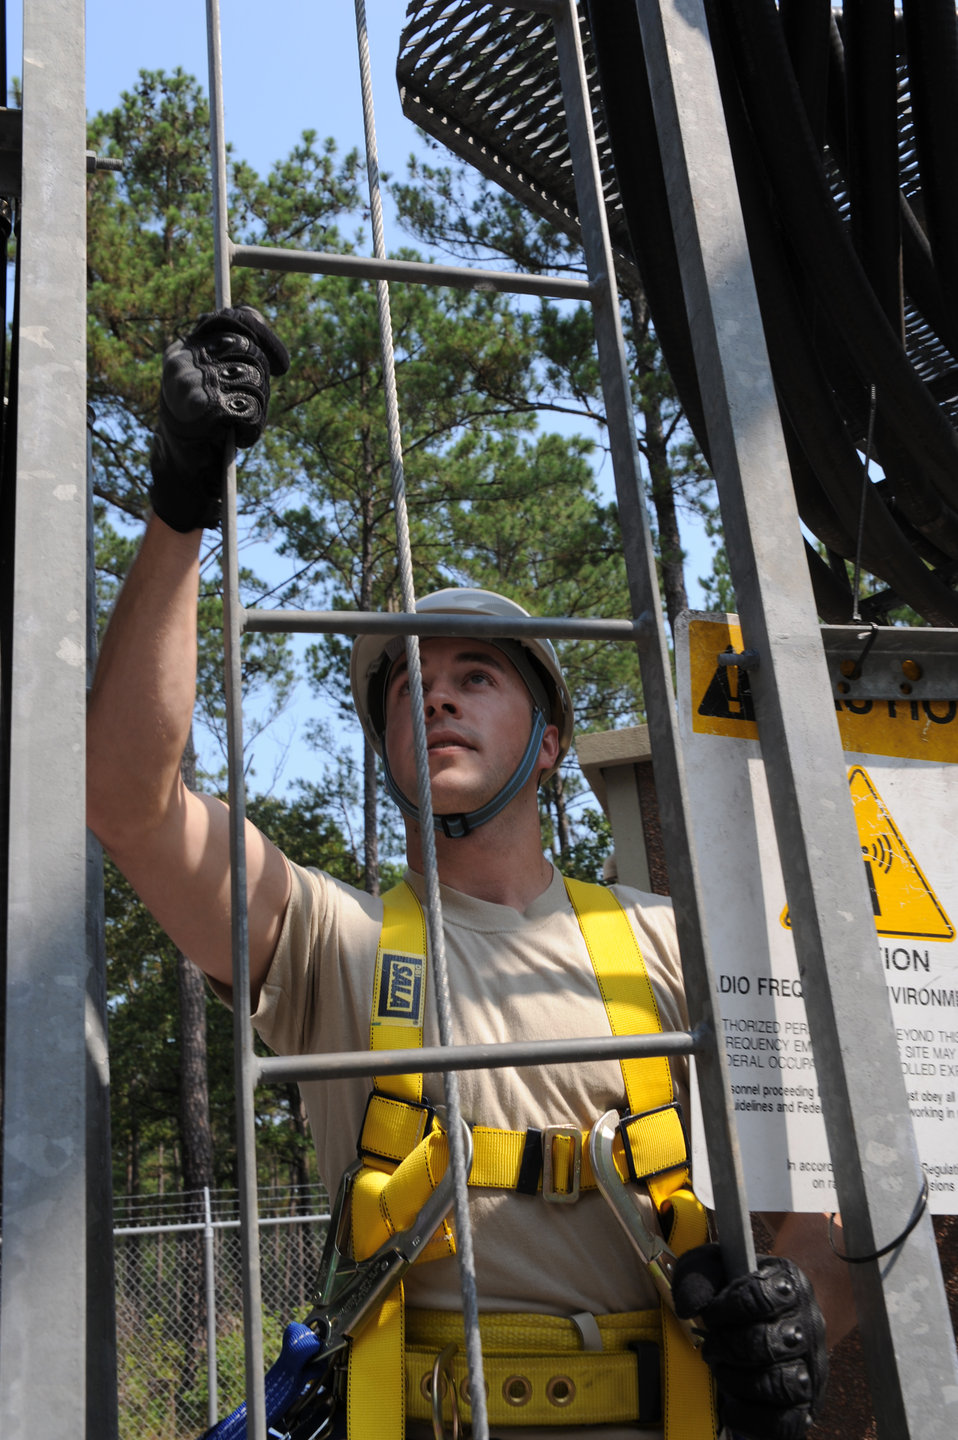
Airmen climb a radio tower

Senior Airman Matthew Baldyga prepares to climb a radio frequency tower June 14, 2011, during a training exercise at Joint Base Charleston, S.C. Airman Baldyga is a radio frequency transmissions systems journeyman assigned to the 628th Communications Squadron.